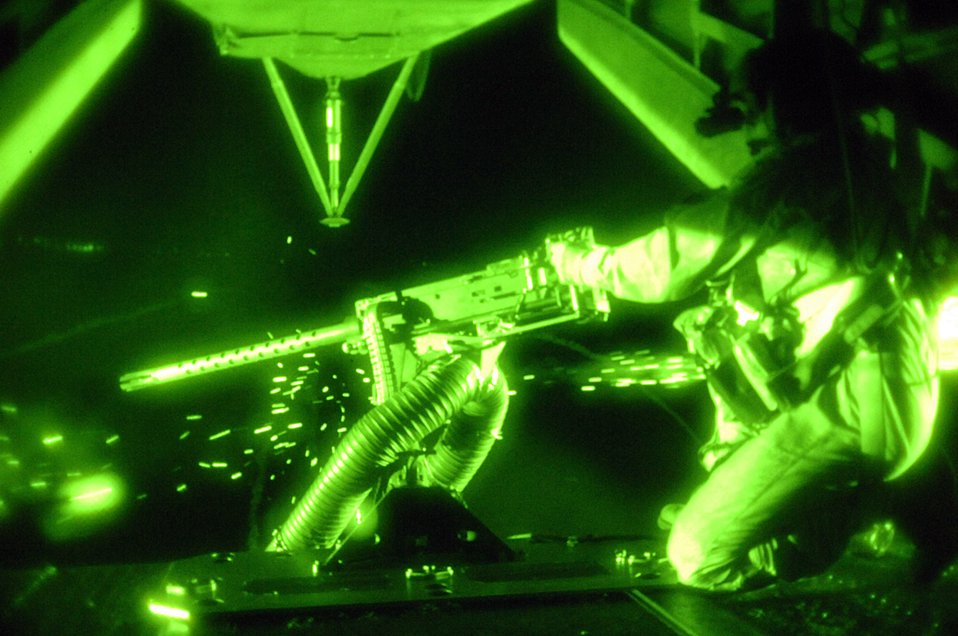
Don't mess with me

Staff Sgt. Matthew Hanlon scans for incoming threats from the back of his MH-53 Pave Low helicopter while flares used for radar countermeasures are jettisoned during a training exercise Aug. 15 over a live-fire range at Eglin Air Force Base, Fla.